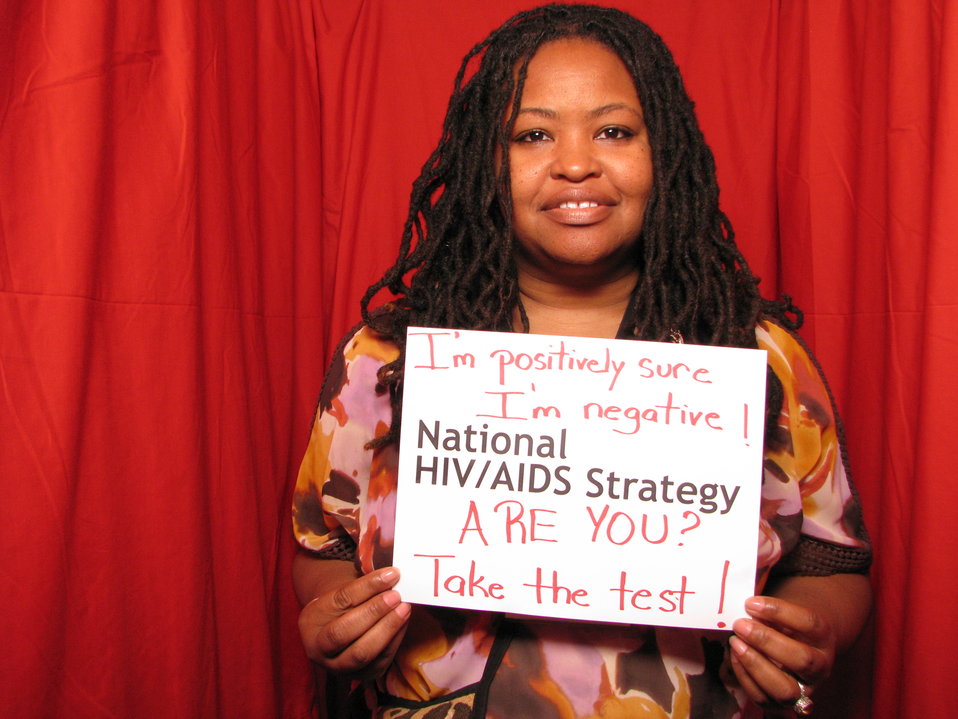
I'm Positively Sure I'm Negative! ARE YOU? Take the Test! National HIV/AIDS Strategy.

From the AIDS.gov photo booth at the U.S. Conference on AIDS, September 2010 (Orlando, FL).